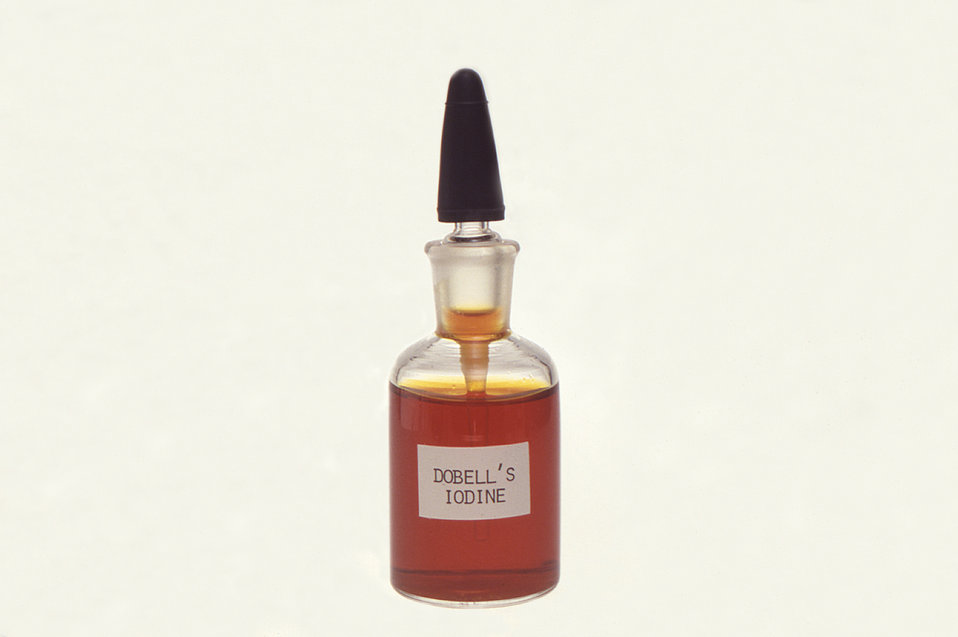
This 1981 photograph depicted a glass dropper bottle containing a Dobell's iodine solution.